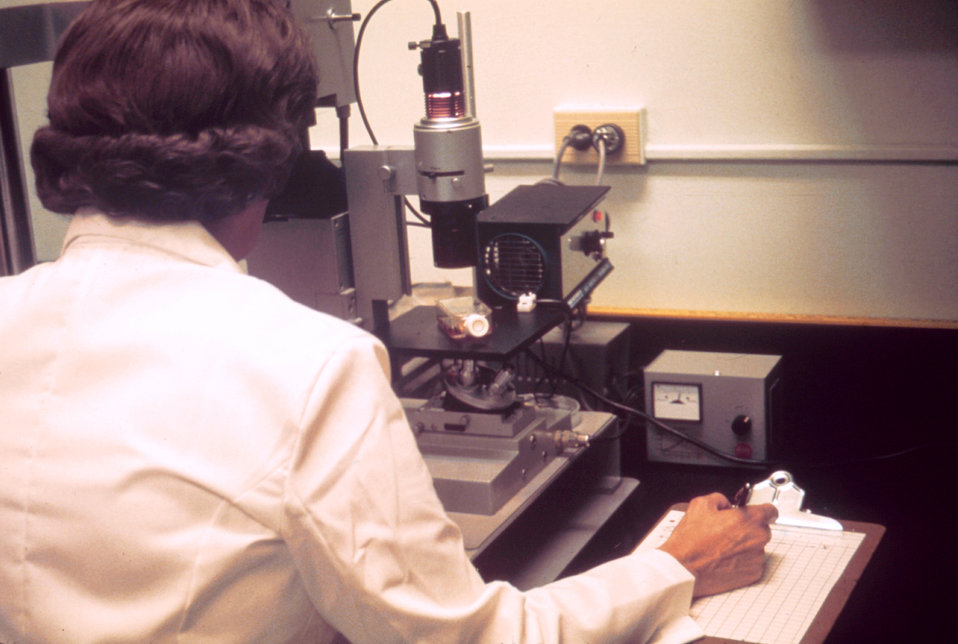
This lab technician is recording the appearance of amniotic fluid cultures under an inverted microscope.